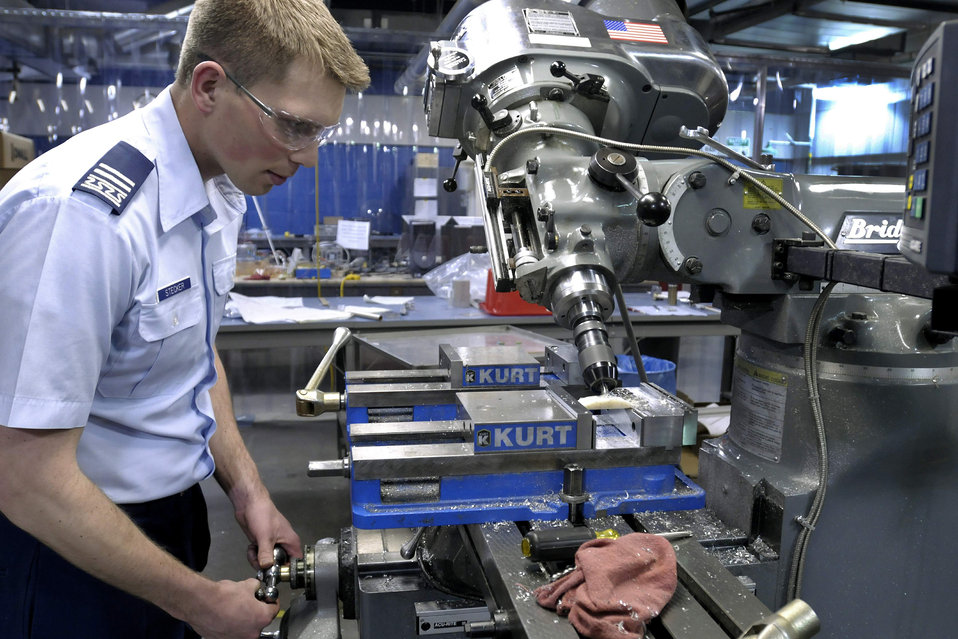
Academy space fleet continues to grow

U.S. Air Force Academy Cadet 1st Class Tyler Stecker creates an umbilical pairing for the flight model of FalconSAT-5 March 17 at the Academy in Colorado. The umbilical pairing will allow the satellite's batteries to be continually charged until launch. FalconSAT-5 is slated for launch in December.